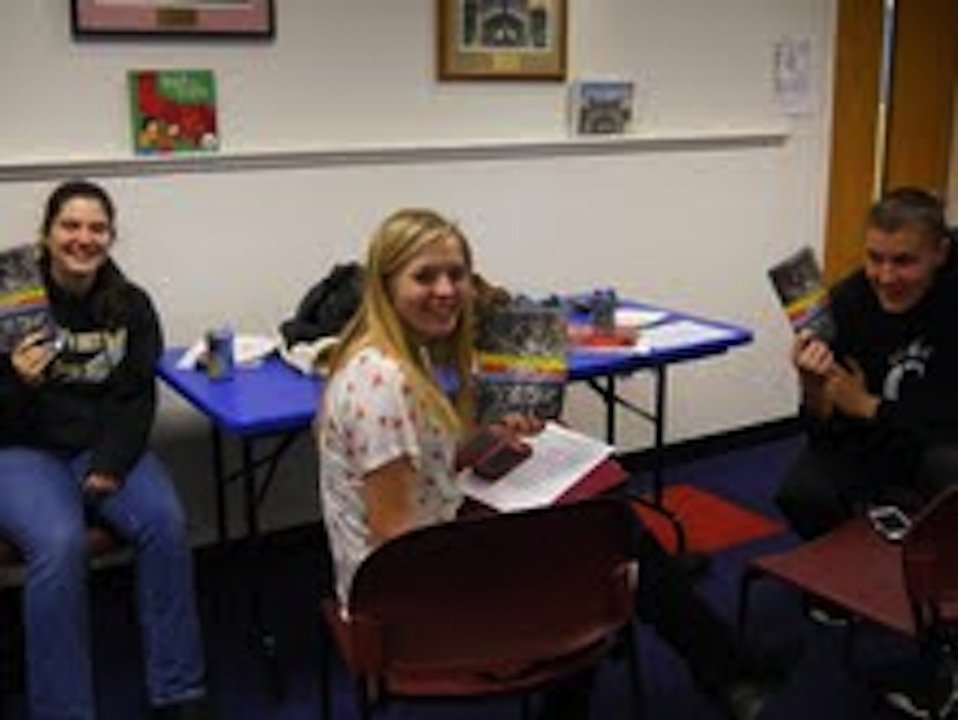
NDFW Chat Day 2013

Perrysburg, Oh. NDFW 2013 Chat Day event with Prevention Partners Program.